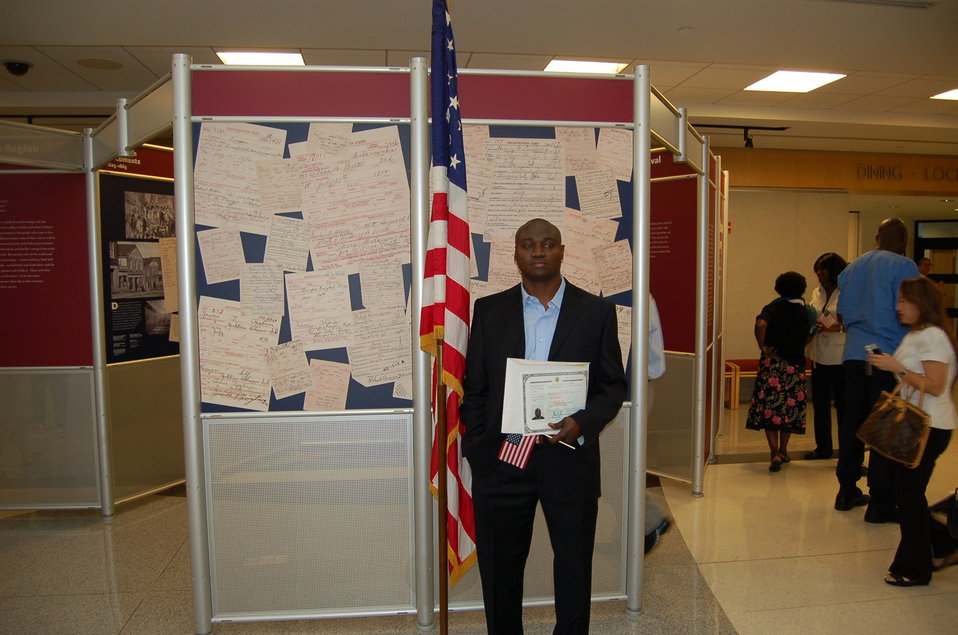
New Citizens